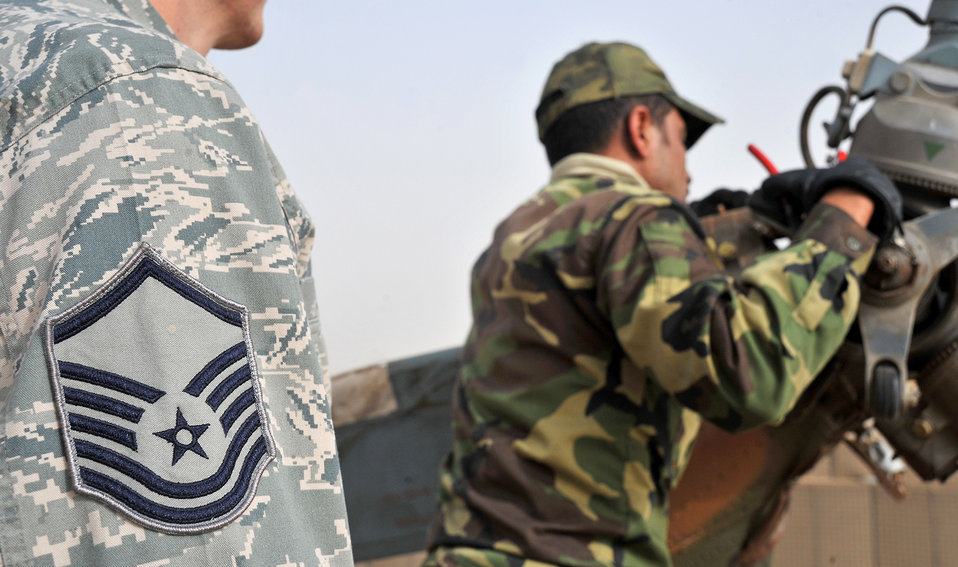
721st AEAS

Master Sgt. Lawerence Shaw watches as an Iraqi Army Aviation Command soldier adjusts the tail rotor of a Mi-17 helicopter Dec. 11, 2010, in Taji, Iraq. Sergeant Shaw is a 721st Air Expeditionary Advisory Squadron maintenance air adviser. Air advisers with the 721st AEAS work with AAC members at Taji to advise and assist them in building a safe, self-sustaining Iraqi rotary-wing force.